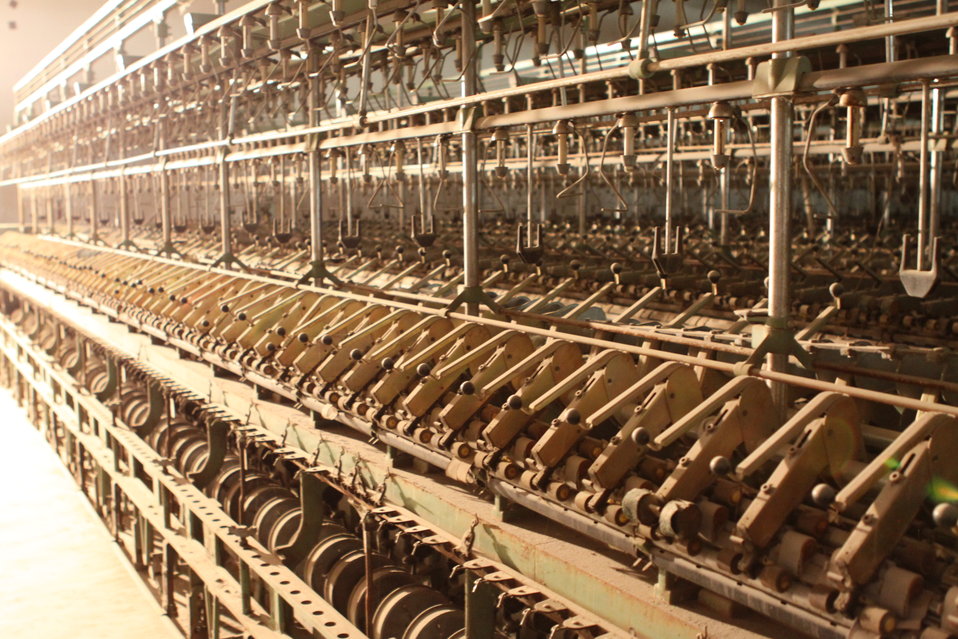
100525 Hirat Textile Company 731